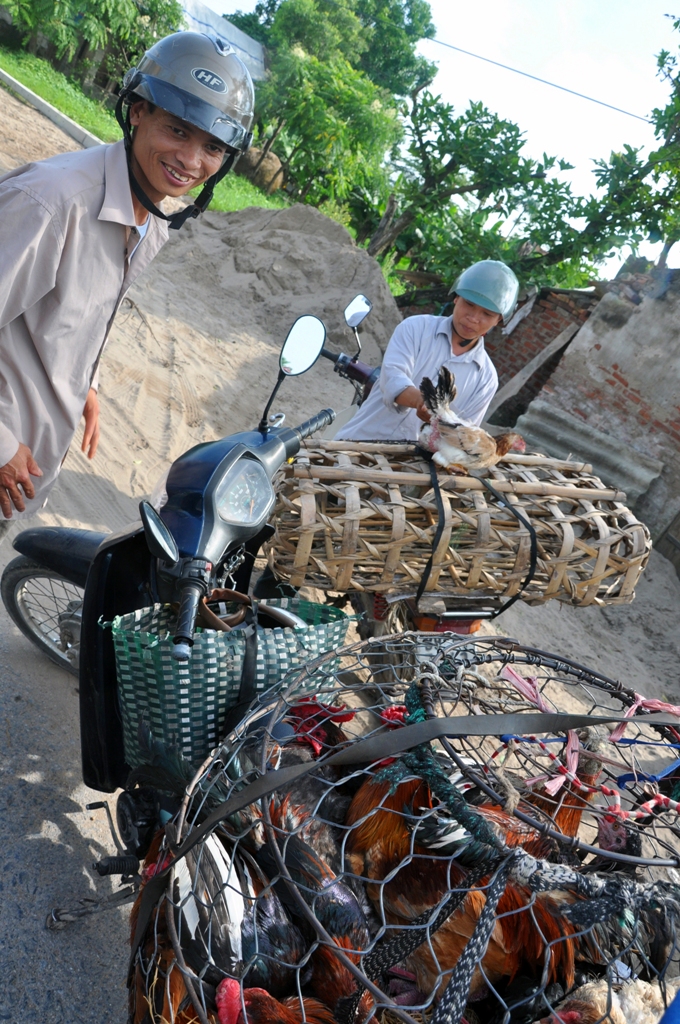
USAID helps Vietnam combat bird flu